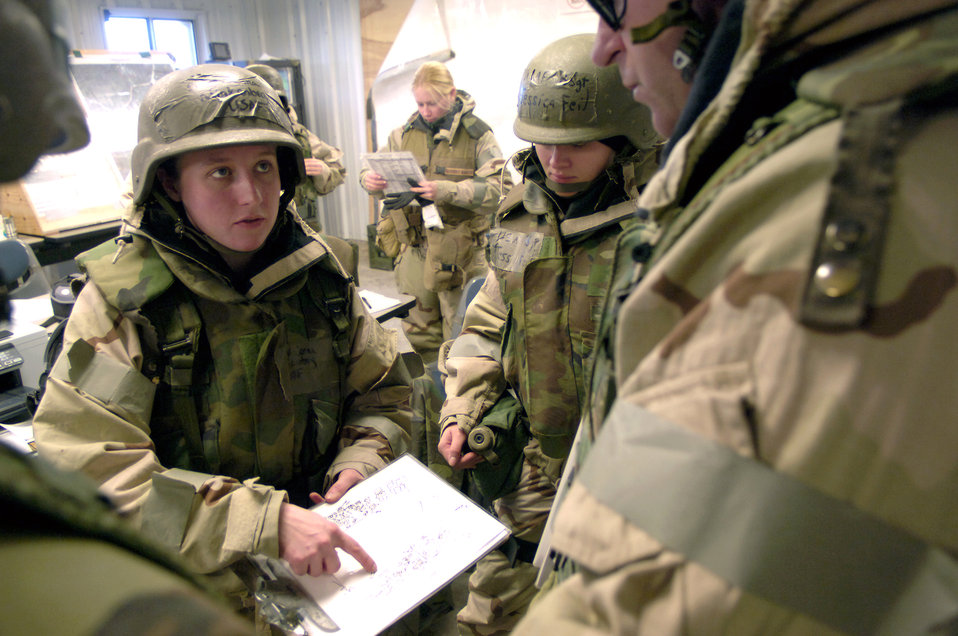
Readiness troops train for the future

Staff Sergeant Jenna Klinkenberg briefs fellow readiness Airmen on the information obtained during a site survey of a potentially contaminated room Nov. 16. The site survey was part of a readiness training exercise at Fort Leonard Wood, Mo.